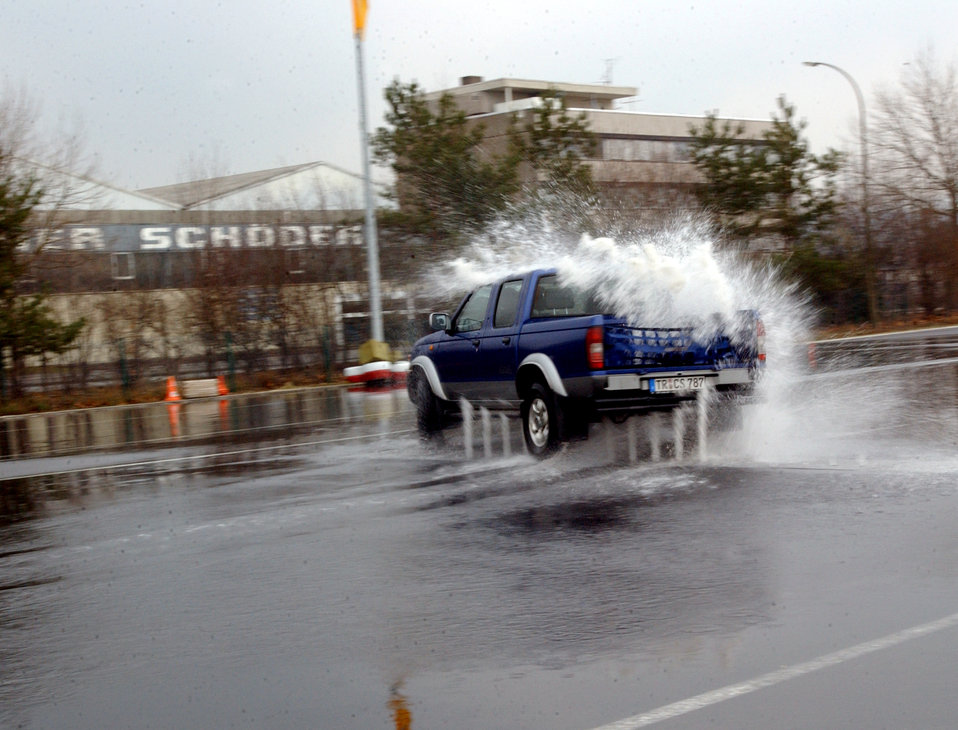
Safety slide

SPANGDAHLEM AIR BASE, Germany -- Thomas Steininger slides his Nissan pickup truck across a slick wet surface, simulating an icy road March 11 while participating in the 52nd Fighter Wing's defensive drivers course. The course is designed to help drivers learn the limitations of their vehicles in a safe controlled enviornment.